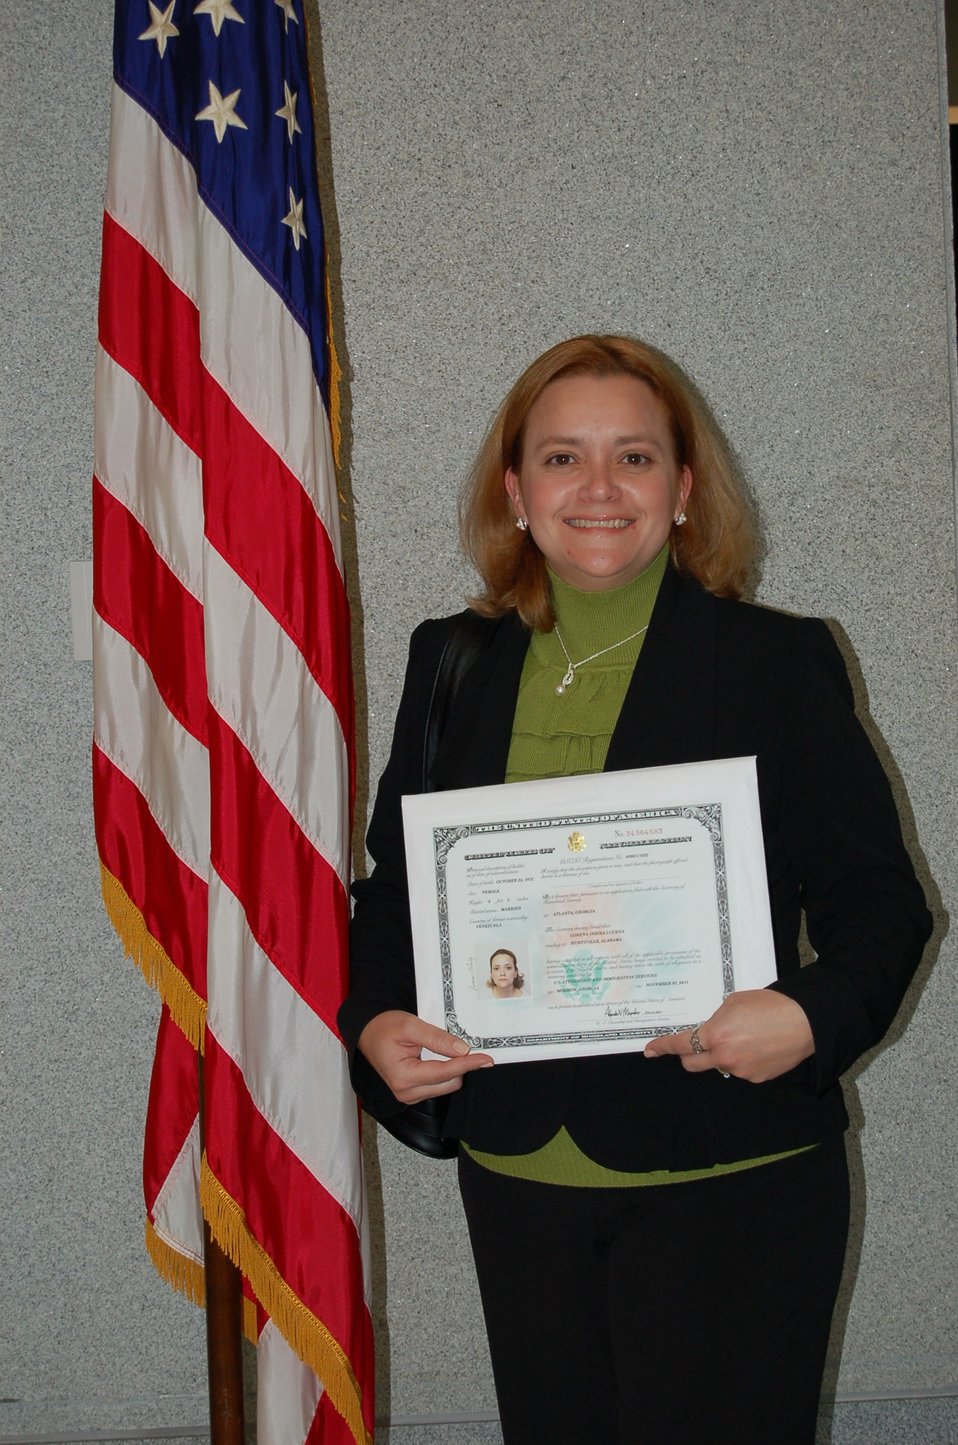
New Citizens